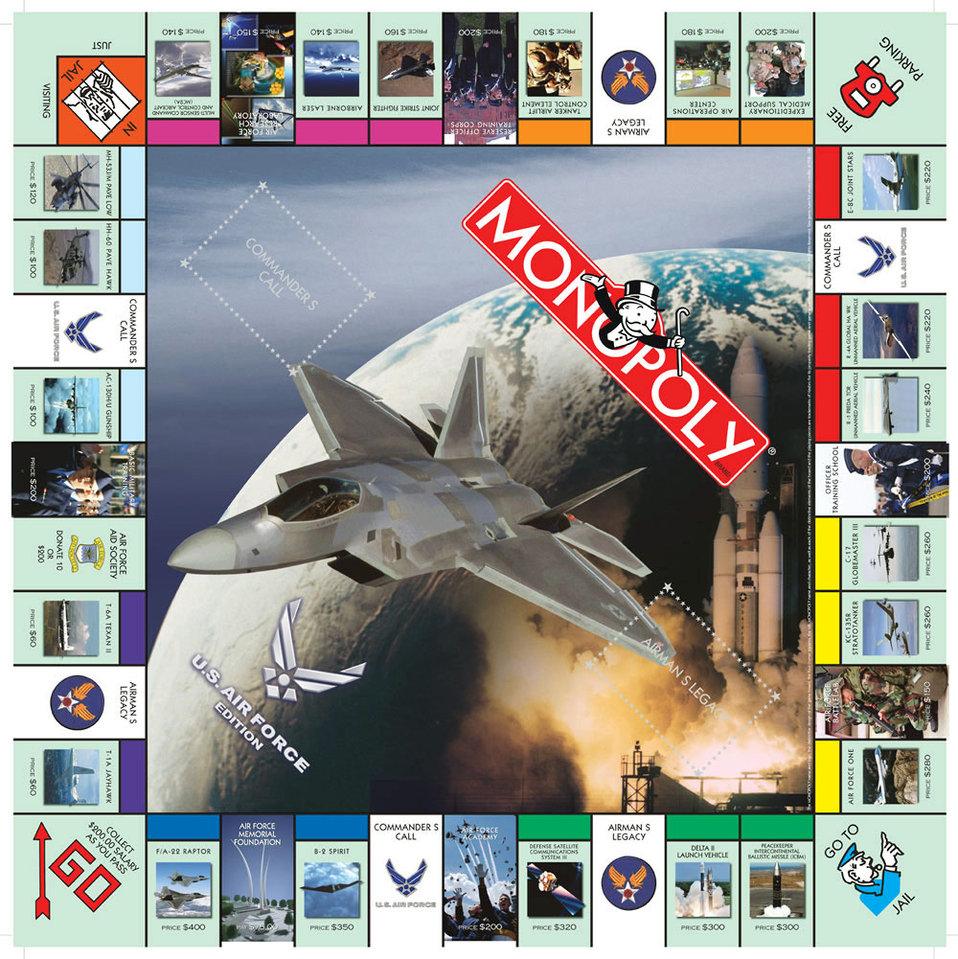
Air Force Edition Monopoly coming soon

WASHINGTON -- Air Force Edition Monopoly will be available at base exchanges beginning Dec. 1. Instead of traditional houses and hotels, the Air Force edition features air expeditionary squadrons and air expeditionary wings. Players navigate the board with a B-2 Spirit, an air traffic control tower, the F/A-22 Raptor, a satellite, an unmanned aerial vehicle or a C-17 Globemaster III.